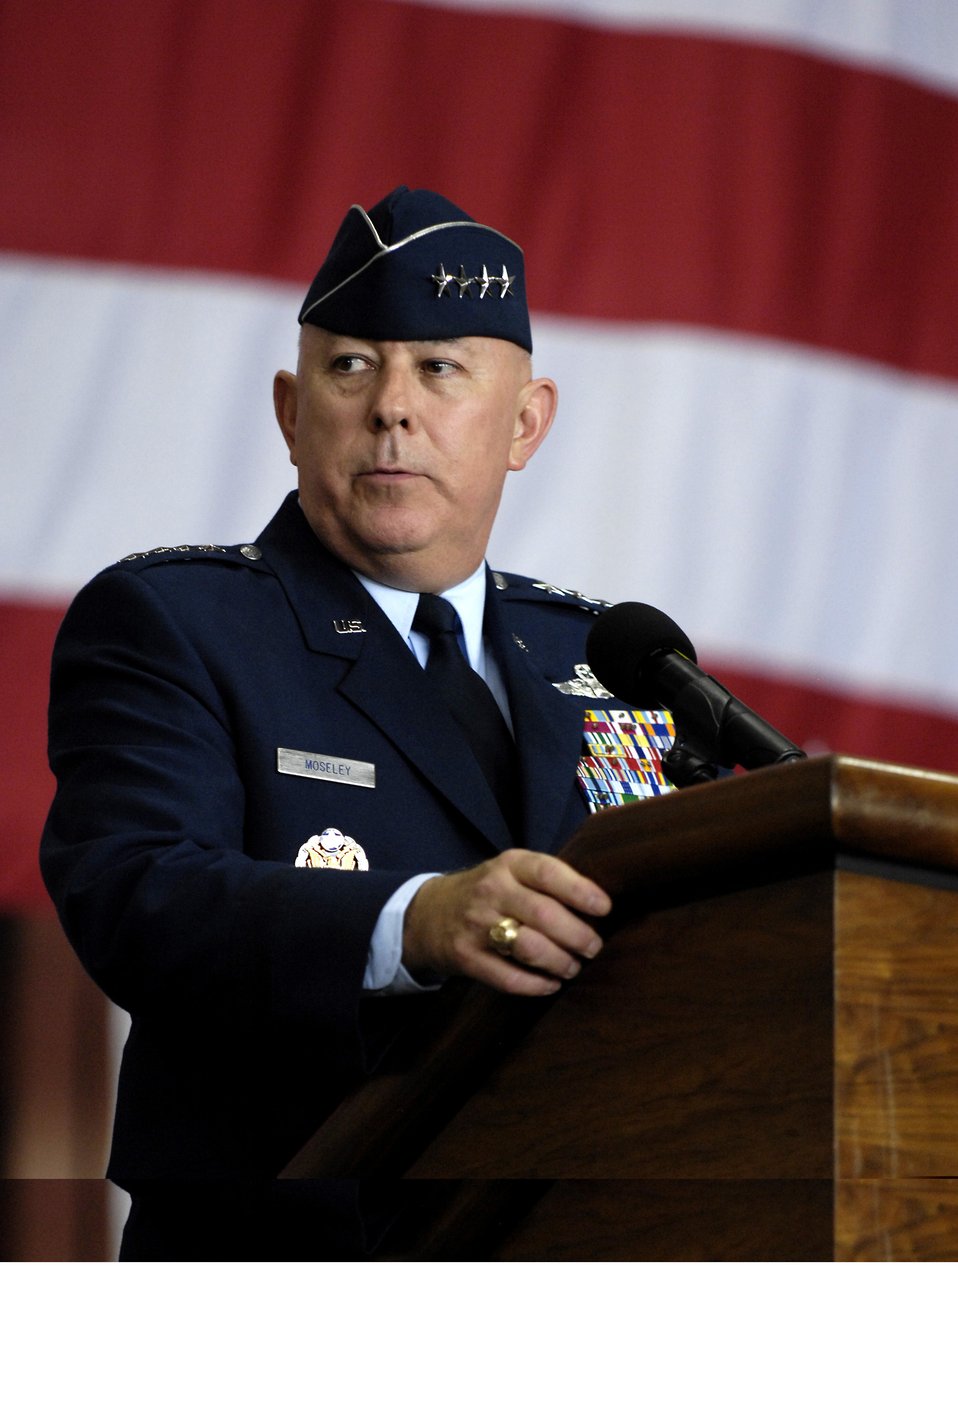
General Chandler takes command

Gen. T. Michael Moseley, Chief of Staff, U.S. Air Force speaks during Gen. Paul V. Hester's Pacific Air Forces change of command ceremony Nov. 30 at Hickam Air Force Base, Hawaii. Gen. Moseley and Adm. Timothy J. Keating, Commander U.S. Pacific Command presided over the change of command. Gen. Carrol H. Chandler assumed command of PACAF during the ceremony.